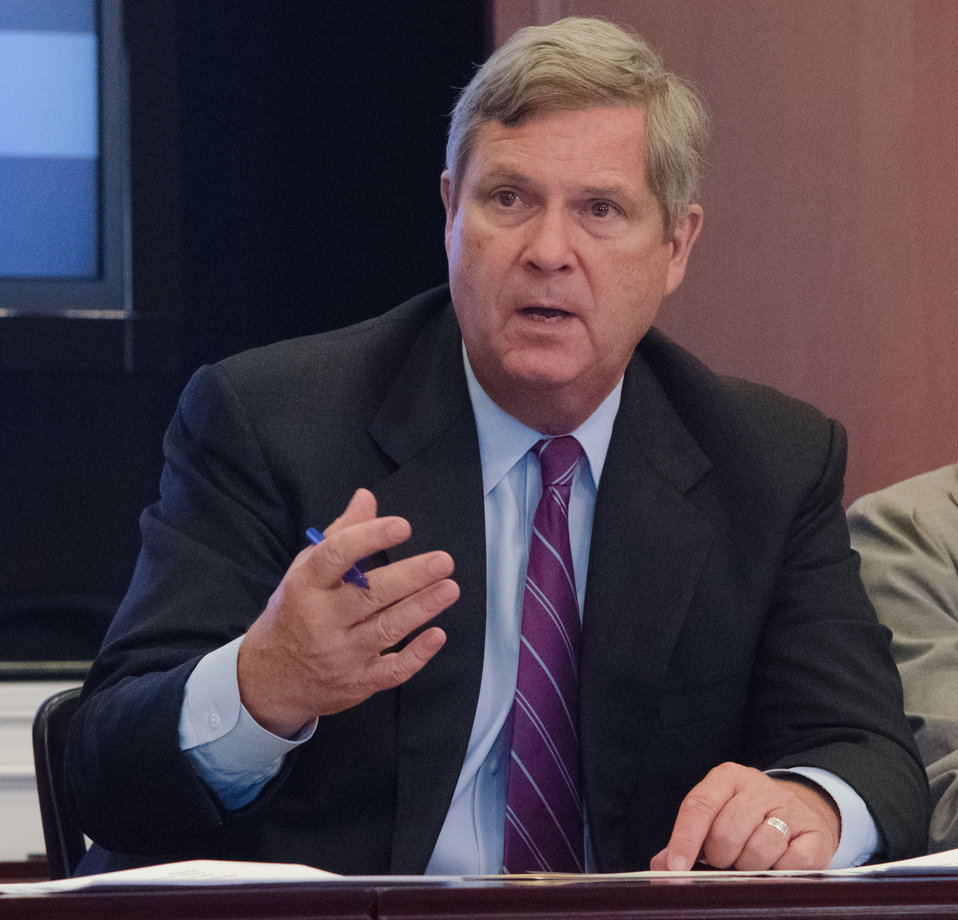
Agriculture Secretary Tom Vilsack chairs a meeting of the White House Rural Council at the White House in Washington, D.C. on Friday, Oct. 5, 2012. The White House Rural Council discusses recent White House announcements and Secretary Vilsack asked council members to outline their work plan for the coming months.